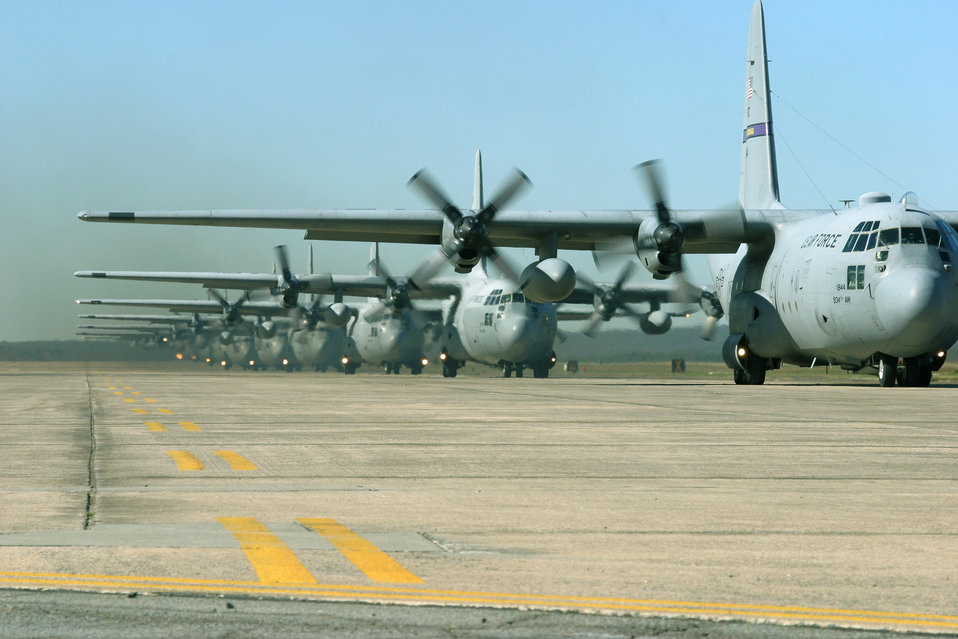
Sweet 16

LITTLE ROCK AIR FORCE BASE, Ark. -- Air Force C-130 Hercules line up Oct. 24 before launching as part of a 16-aircraft formation flight and heavy-equipment drop competition.